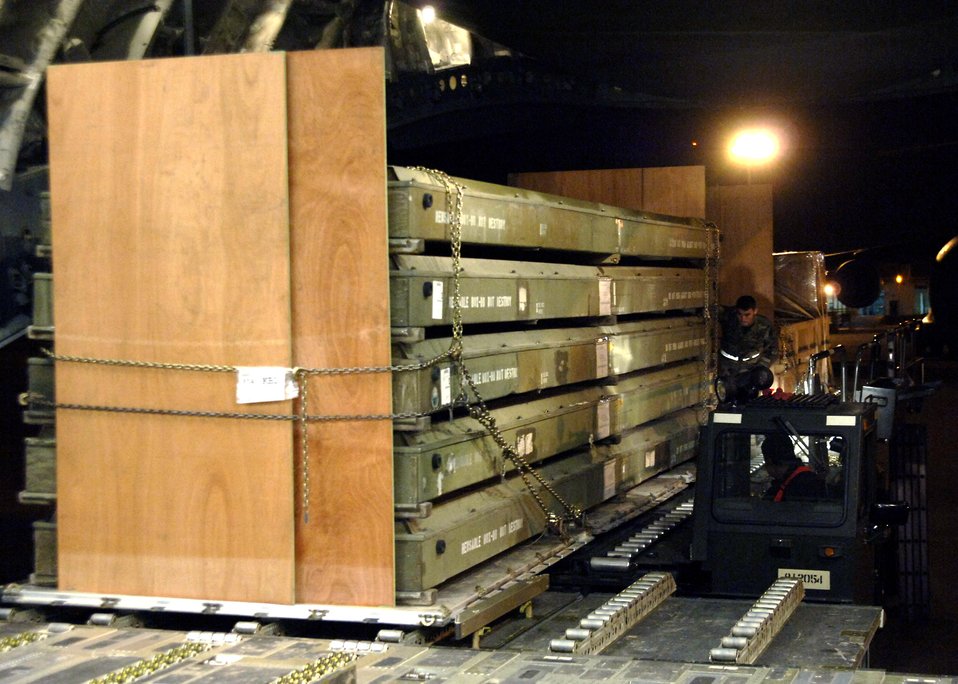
Turkey partners with U.S. in war on terrorism

Airman 1st Class Brian Pryor secures Turkish equipment onto a C-17 Globemaster III being transported to Kabul Air Base, Afghanistan, April 16 from Incirlik Air Base, Turkey. Helicopter rotor blades are positioned on a C-17 Turkish supplies including two helicopters, an ambulance, a tractor and numerous shipping containers were loaded by an assortment of Reserve, Guard and active-duty members who make up the 728th Air Mobility Squadron to be transported to Kabul, Afghanistan. Airman Pryor is a 728th AMS load team member.